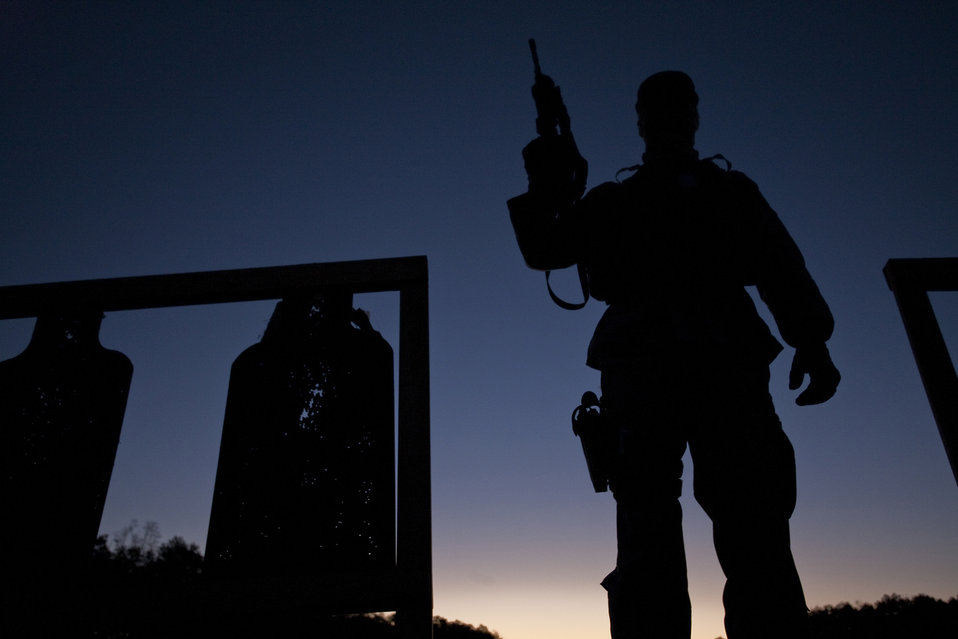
On target

Senior Airman Mason Flores takes a moment to survey the scene in the pre-dawn light after preparing targets for upcoming M-4 rifle qualifications. The 138th Security Forces Squadron deployed from Tulsa, Okla., to Fort Chaffee, Ark., for weapons training and qualifications in preparation for an upcoming assignment. Airman Flores is with the 138th SFS.